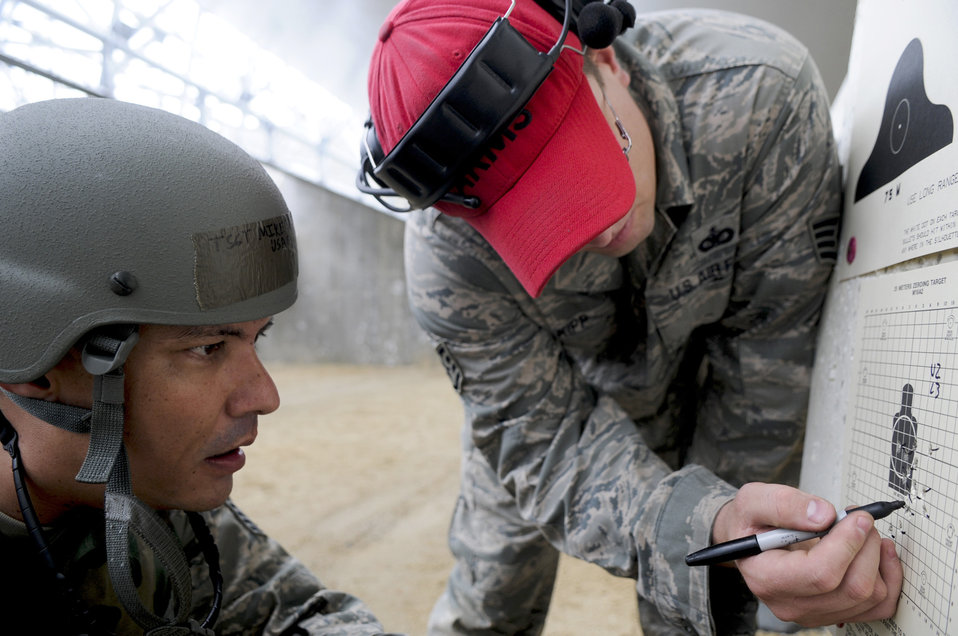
New firing range ‘shoots down’ time, costs

Tech. Sgt. Michael Tateishi watches as Staff Sgt. James Kipp indicates sight corrections on a zeroing target May 24, 2011, at the combat arms firing range at Kadena Air Base, Japan. Renovations began due to the dangerous conditions at the former combat arms area. Sergeant Tateishi is the 18th Wing Public Affairs chief of operations, and Sergeant Kipp is an 18th Security Forces combat arms instructor.